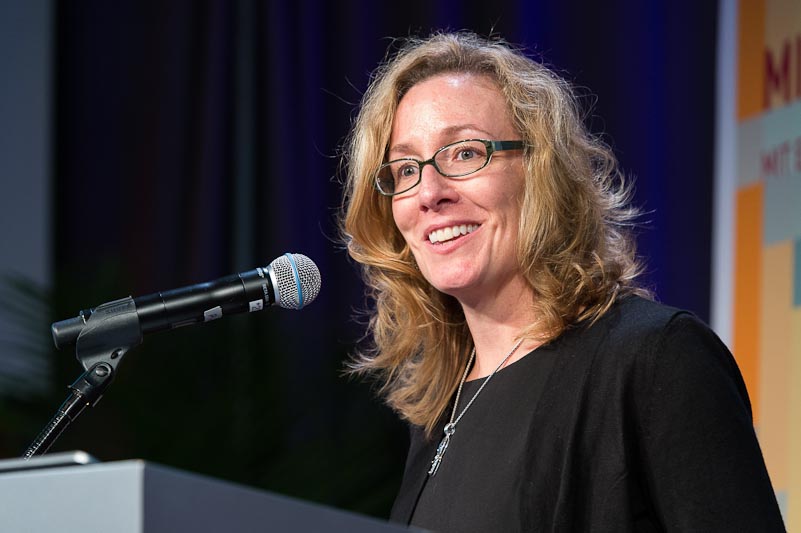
Judy Dorsey

C3E Award Winner, Entrepreneurship & Innovative Business Models